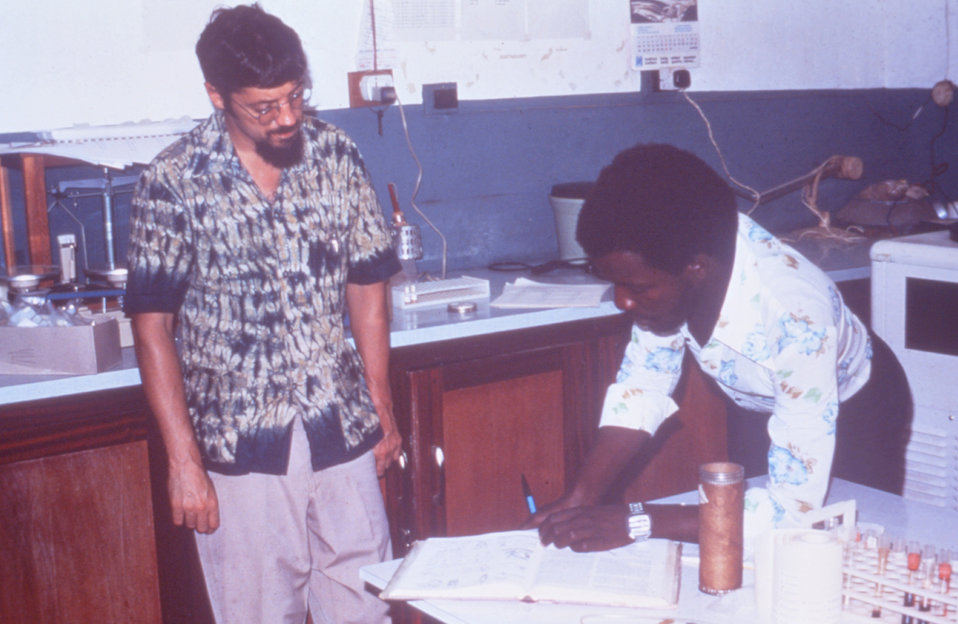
Here Dr. Joseph McCormick, CDC, (left) is in Segbwema, Sierra Leone during a Lassa fever investigation.